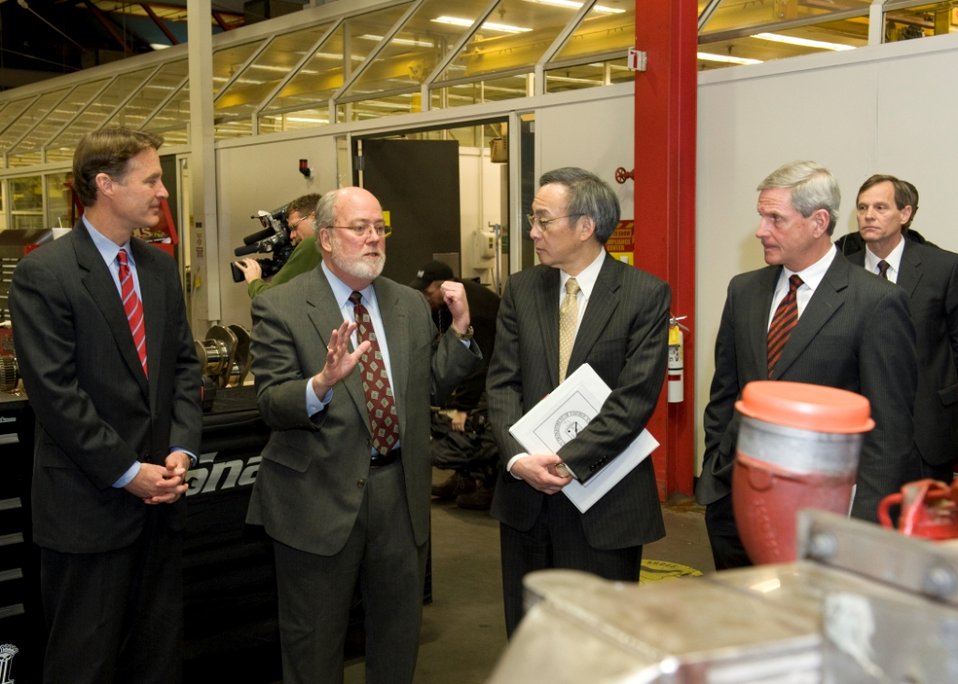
DOE event - Chu 4